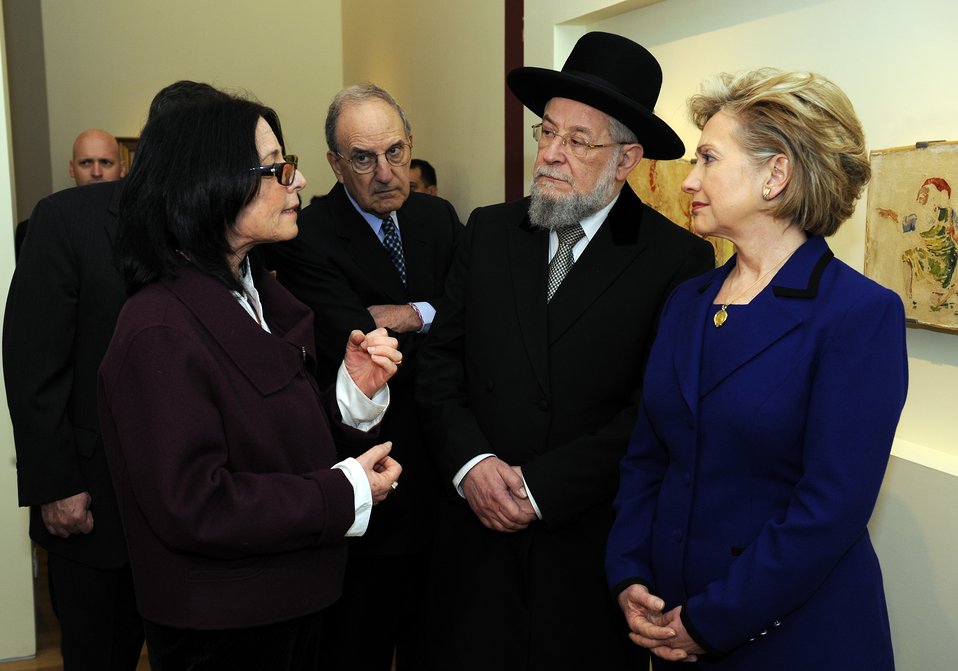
Secretary Clinton Visits Holocaust Art Museum

U.S. Secretary of State Hillary Clinton visited the new Bruno Schulz display, Wall Painting under Coercion, in the Holocaust Art Museum, guided by Director of the Museums Division Yehudit Inbar and Senior Art Curator Yehudit Shendar and accompanied by Chief Rabbi Lau, Yad Vashem Council Chairman, and Middle East Special Envoy Senator George Mitchell in Jerusalem March 3, 2009